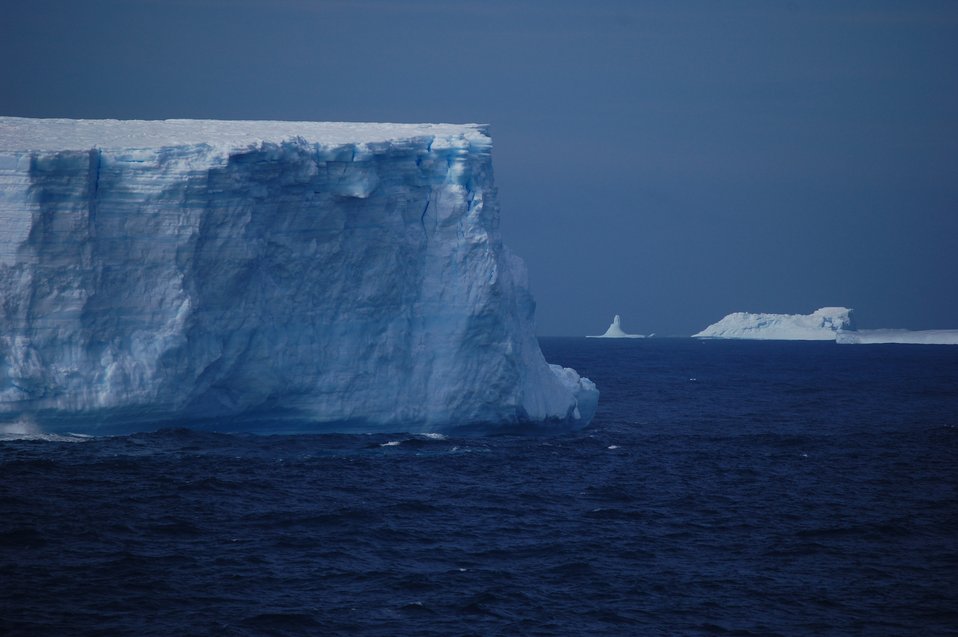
Icebergs